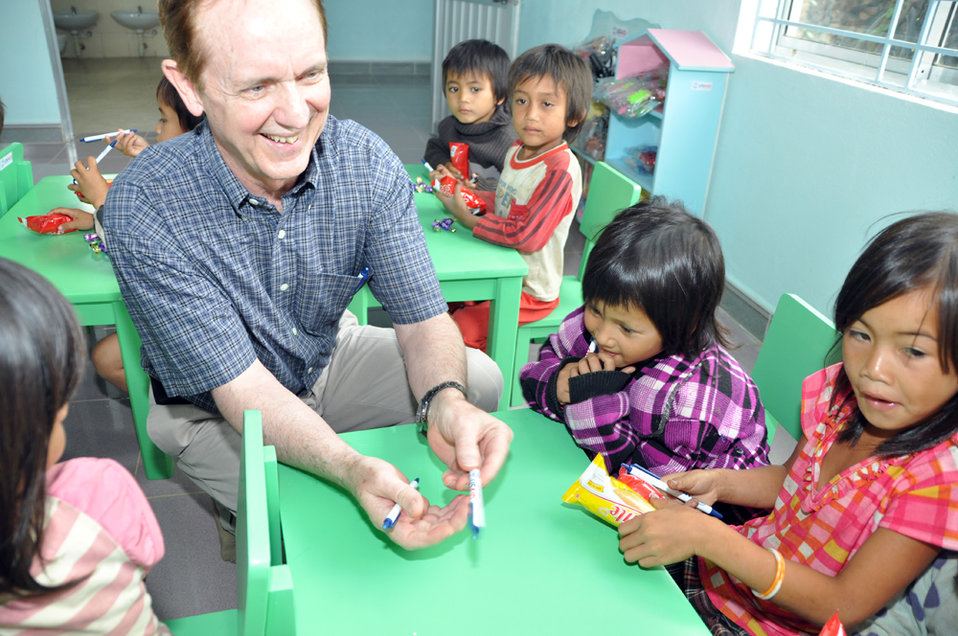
USAID contributes to refurbished pre-schools and teacher training in Vietnam

USAID Mission Director Francis Donovan meets children in Kon Tum.